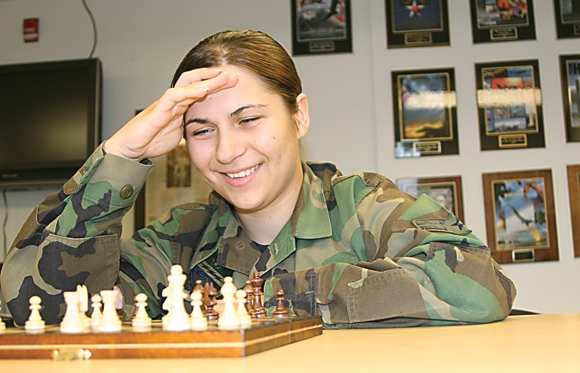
3 Airmen take spots on all-service chess team

Airman 1st Class Elena Dulger plays chess June 2 at Davis-Monthan Air Force Base, Ariz. Airman Dulger will compete as a member of the U.S. chess team in the 19th North Atlantic Treaty Organization Chess Championship Aug. 4 through 8 in Brussels, Belgium. She is assigned to the 388th Fighter Wing Maintenance Operations Squadron.